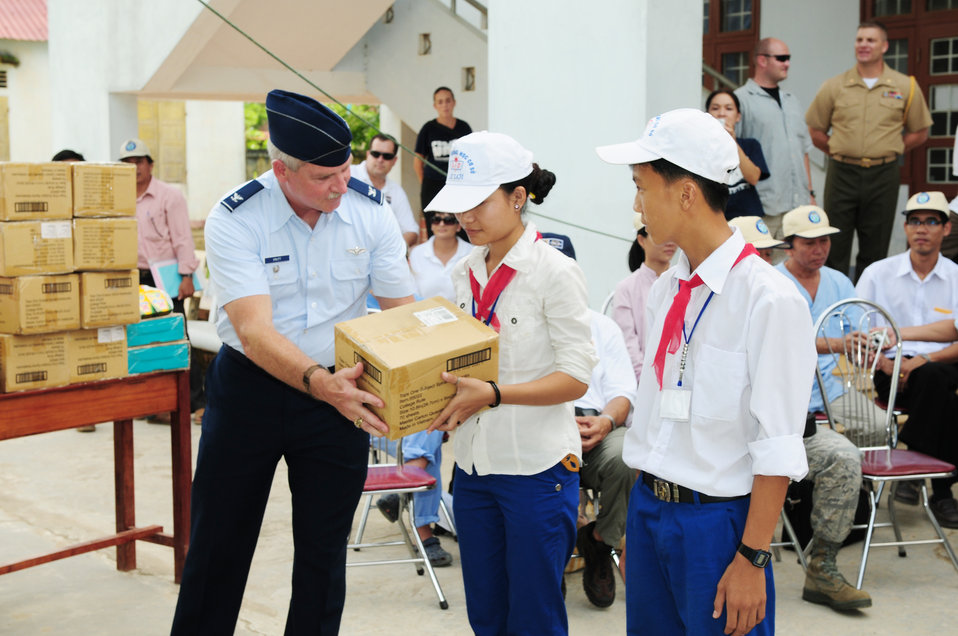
Thousands helped as Pacific Angel concludes

Col. Wayne Pritt presents donated schools supplies and toys to children in Quang Tri Province, Vietnam, Sept. 22, 2009. The donations were presented as part of Operation Pacific Angel 2009. Airmen were in Vietnam Sept. 15 to 24 to provide humanitarian assistance in cooperation with local authorities to area residents. Pacific Angel is a Pacific Air Forces operation led by 13th Air Force at Hickam Air Force Base, Hawaii. Colonel Pritt is the 13th Air Force command surgeon at Hickam AFB.